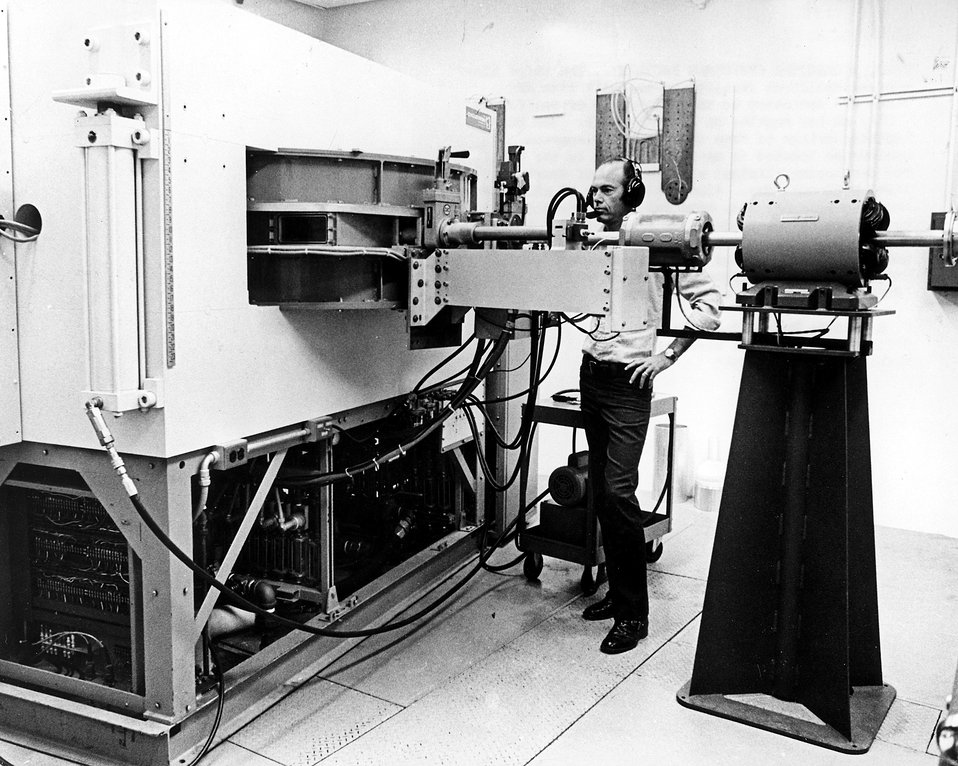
The third biomedical cyclotron facility to be built with AEC funds was dedicated at the University of California (UCLA) at Los Angeles on June 30, 1971. Circa 1972.